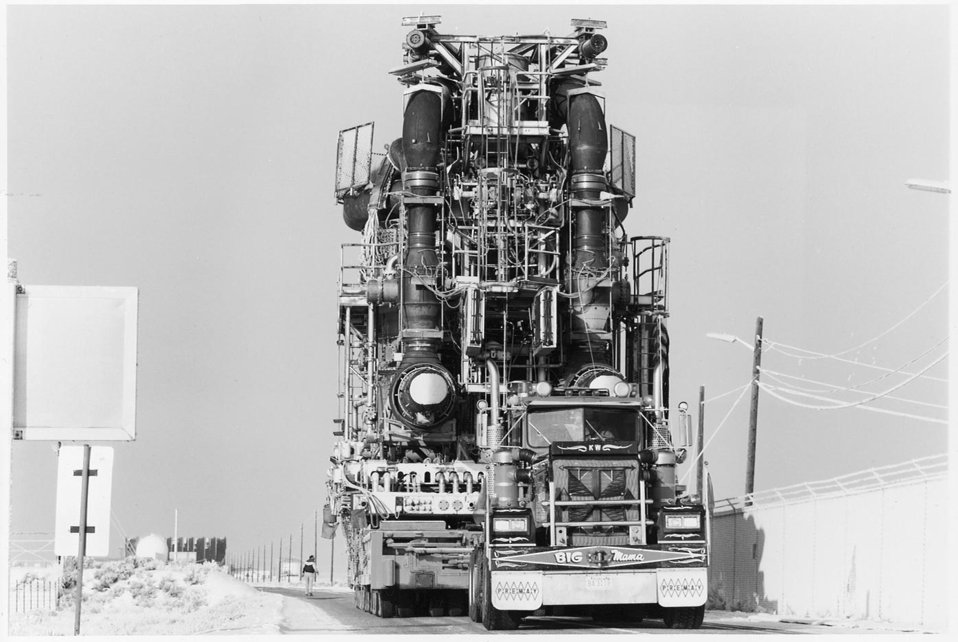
Photo of the Week: Not Your Typical Jet Engine

As part of the Aircraft Nuclear Propulsion Program, the U.S. conducted extensive research showing that nuclear fission could power an aircraft. The research involved a series of Heat Transfer Reactor Experiments (HTREs), which tested if different types of jet engines could be run by nuclear power. In 1955, however, the project was cancelled, and a safe, operational prototype aircraft was never developed. In this 1988 photo, the two HTRE reactors are shown in transport to Idaho National Laboratory's EBR-1 visitor center, where they remain today.